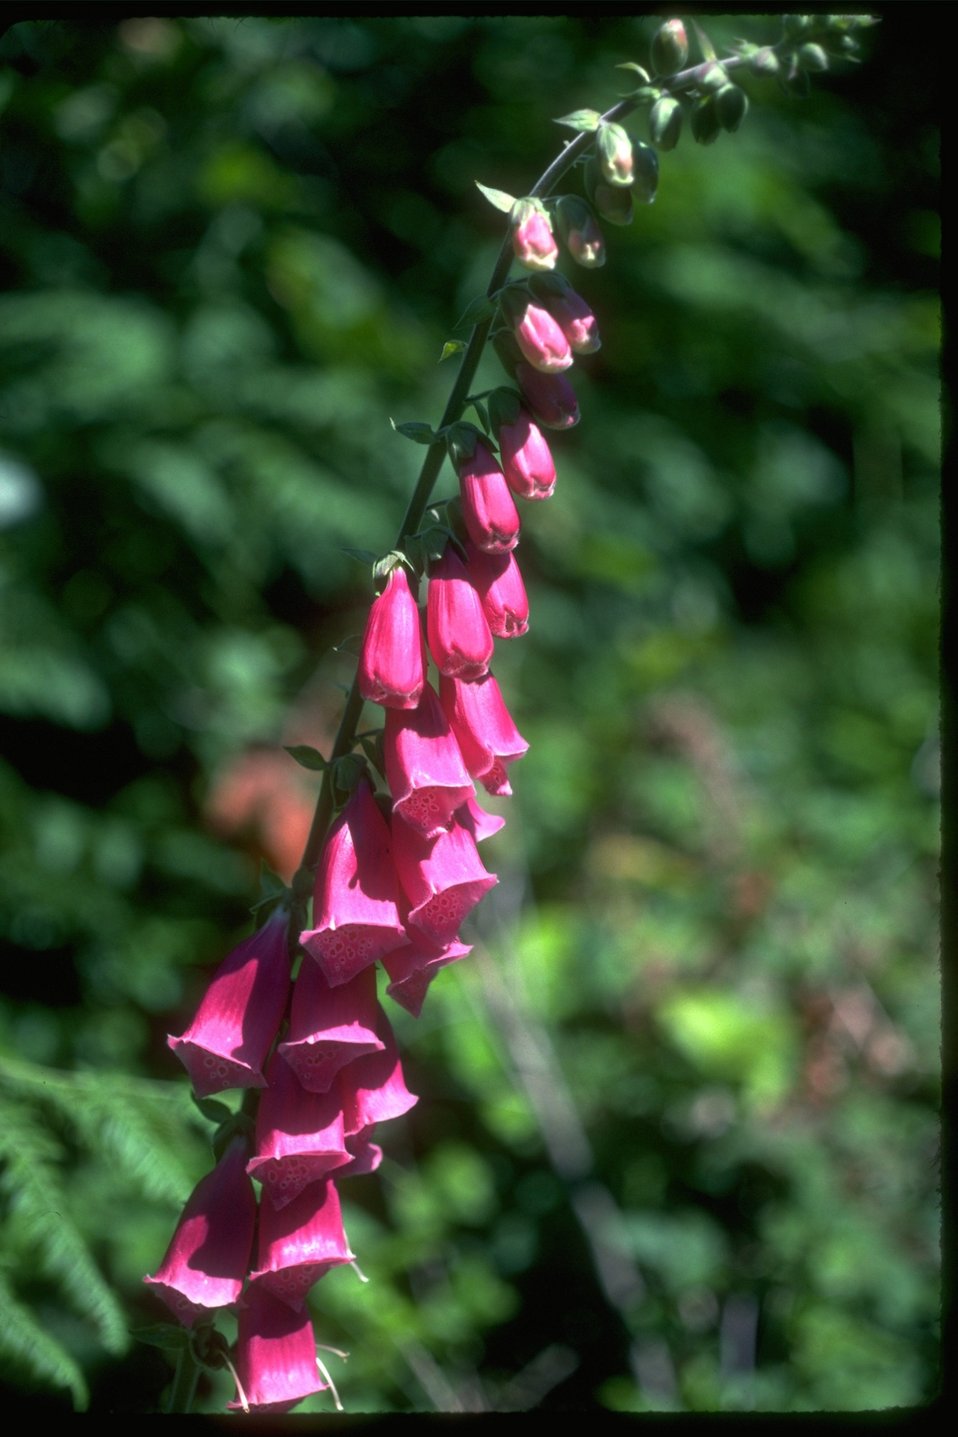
Fox Gloves (digatalis pupurea)